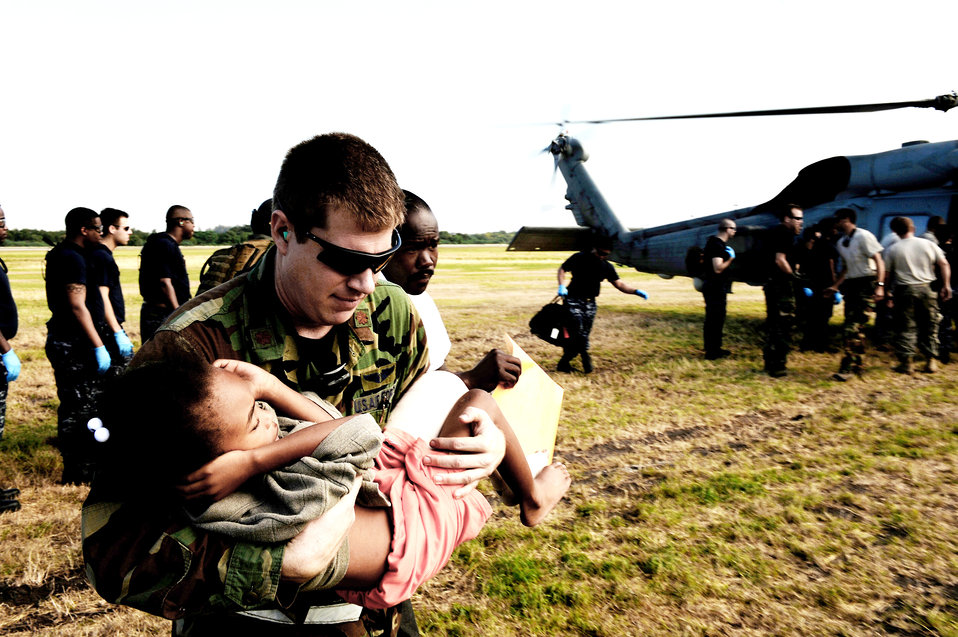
Hurlburt Field medics continue to save lives in Haiti

Maj. Timothy Ballard carries a 6-year-old boy from a helicopter to a field clinic Jan 19, 2010, at the Toussaint L'Ouverture International Airport in Port-au-Prince, Haiti. Later, the boy was airlifted to a stateside hospital in southern Florida. Major Ballard is with the 1st Special Operations Support Squadron at Hurlburt Field, Fla.